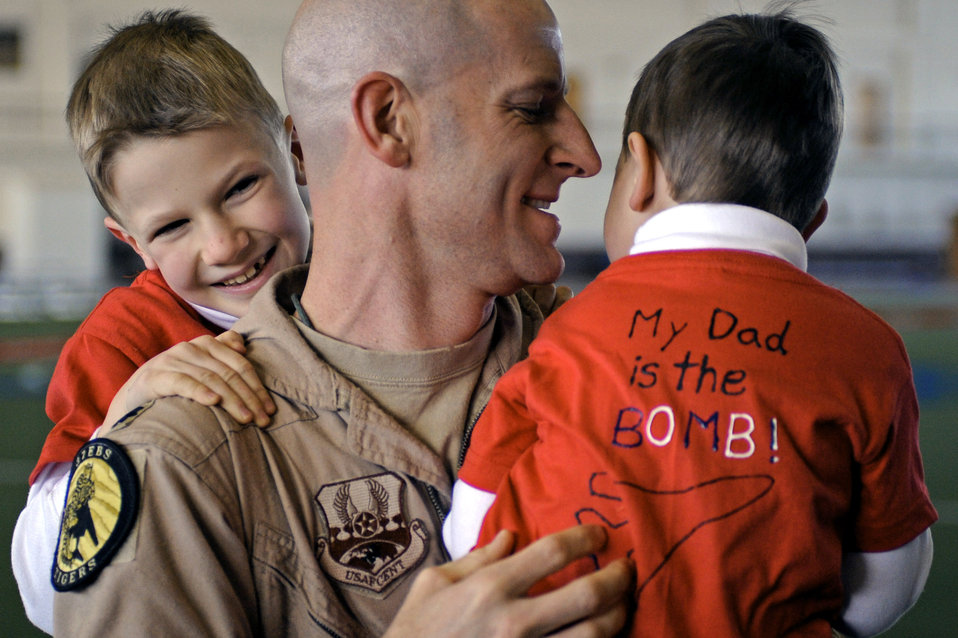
Ellsworth Airmen return home

Lt. Col. Derek Leivestad holds his children after returning from a deployment to Southwest Asia Jan. 27, 2010, at Ellsworth Air Force Base, S.D. While deployed to Southwest Asia, Colonel Leivestad provided support to operations Iraqi Freedom and Enduring Freedom. Colonel Leivestad is a 37th Bomb Squadron B-1B Lancer pilot.